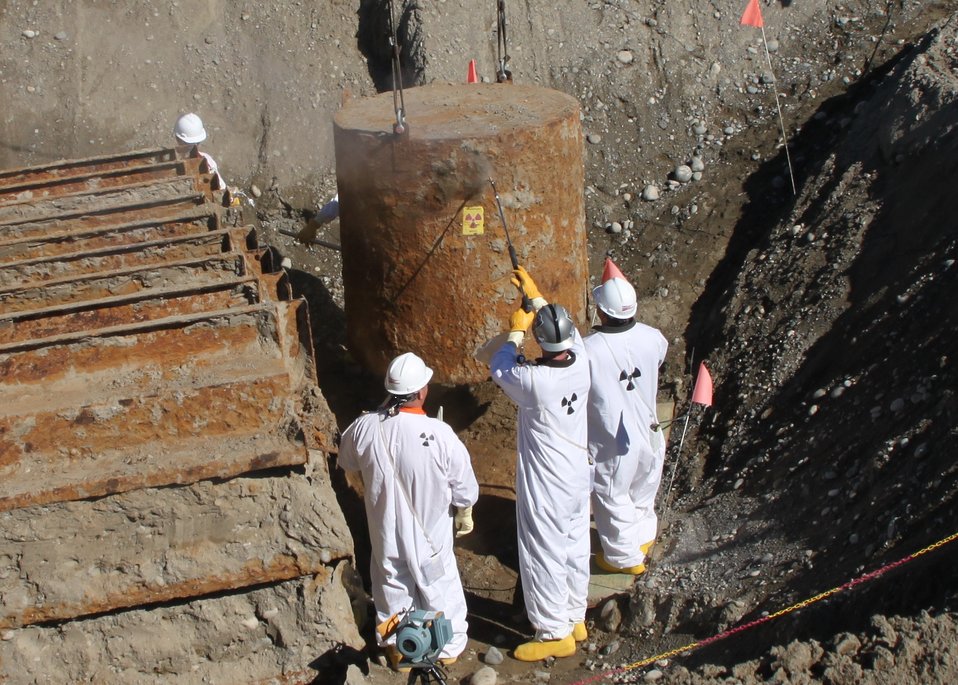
Workers Clean Up Land, Remove Waste in Hanford Site Recovery Act Projects